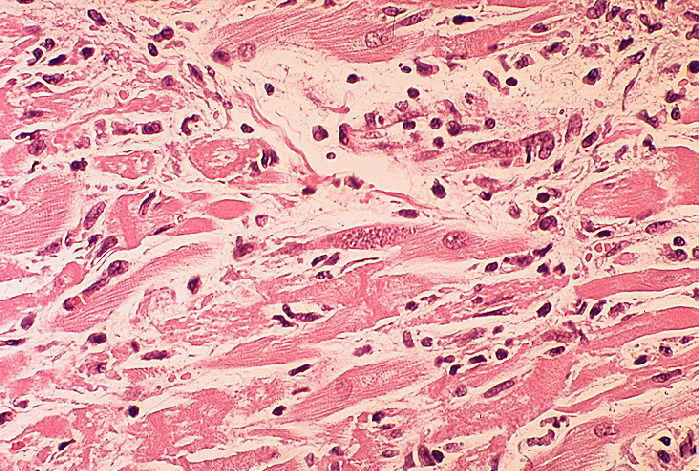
Histopathology of toxoplasmosis of heart in fatal AIDS.